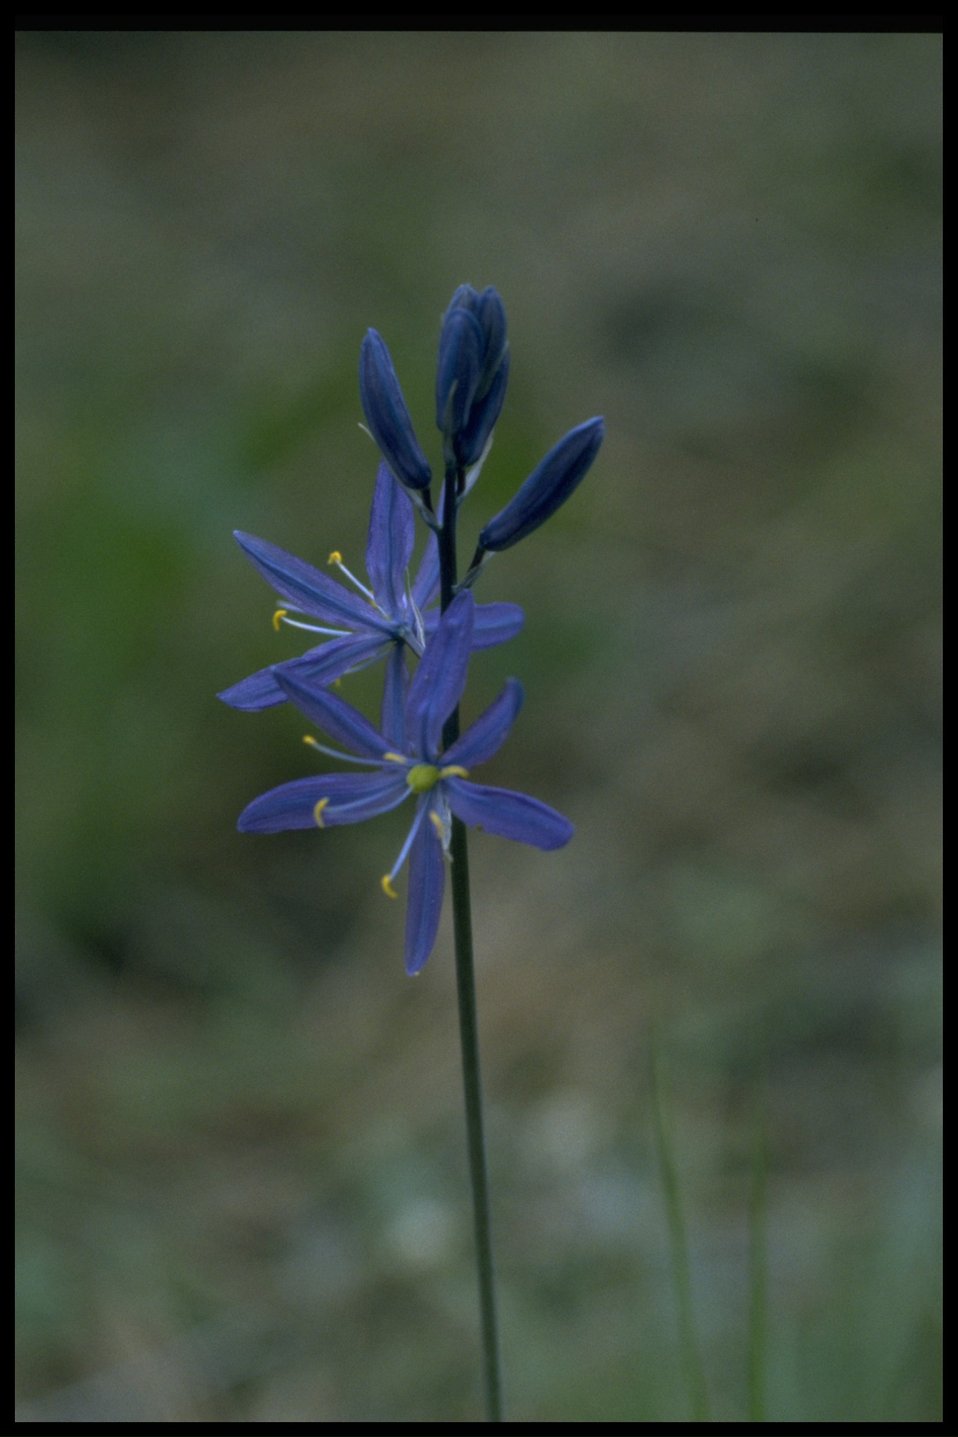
Closeup shot of small camas (Camassia quamash).